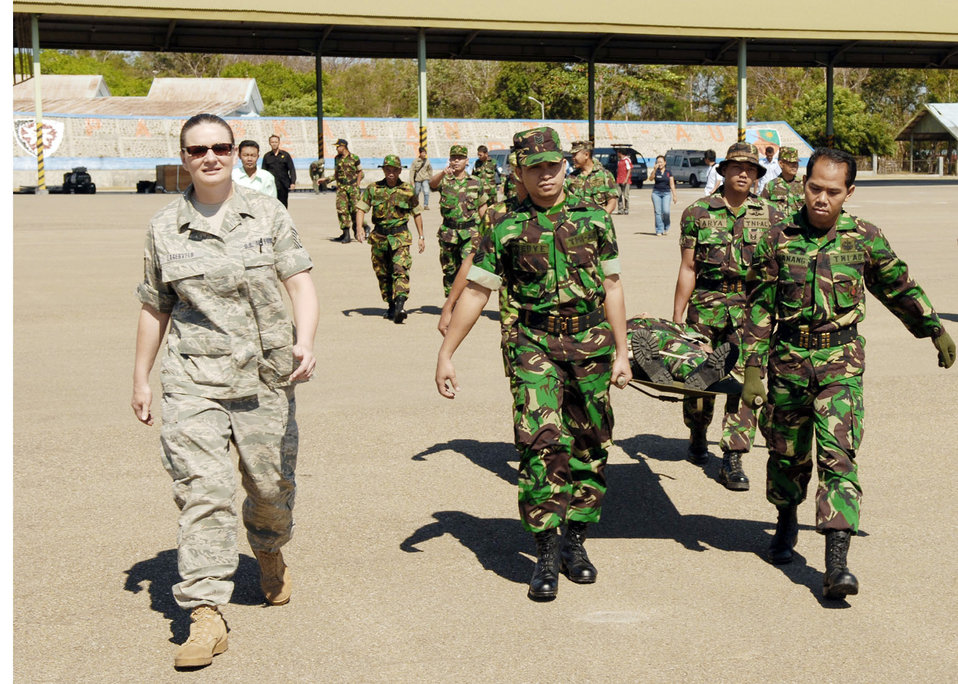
Aeromedical evacuation knowledge shared in Indonesia

Tech. Sgt. Jessica Lagerveld escorts Indonesian military and medical professionals to an Air National Guard C-130 Hercules July 19 at El Tari Air Force Base, Indonesia. Sergeant Lagerveld, an independent duty medical technician from Kadena Air Base, Japan, is in Indonesia as part of Operation Pacific Angel 2009.